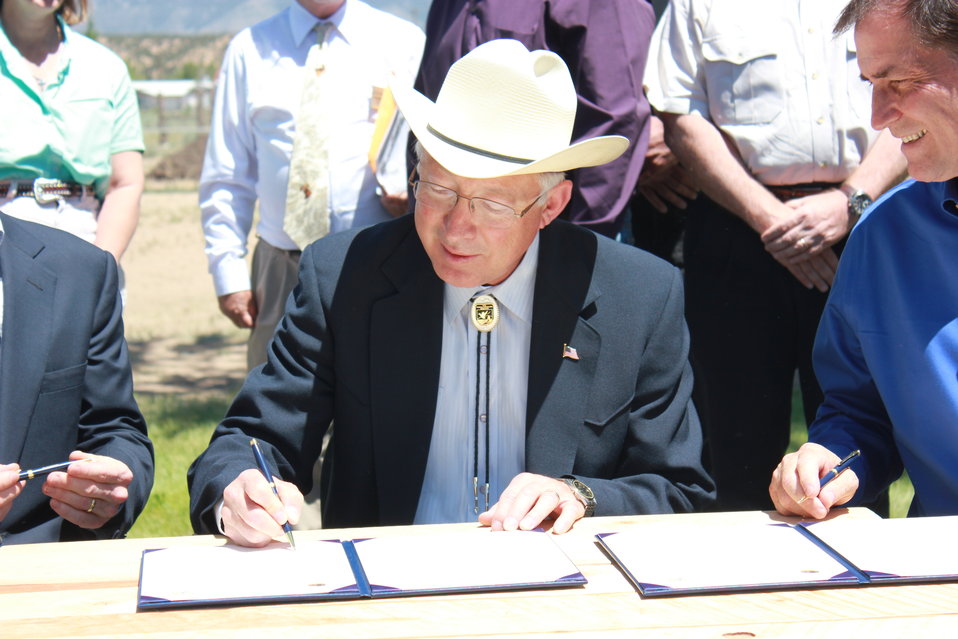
Historic Conservation Easement in Sangre de Cristo Mountains